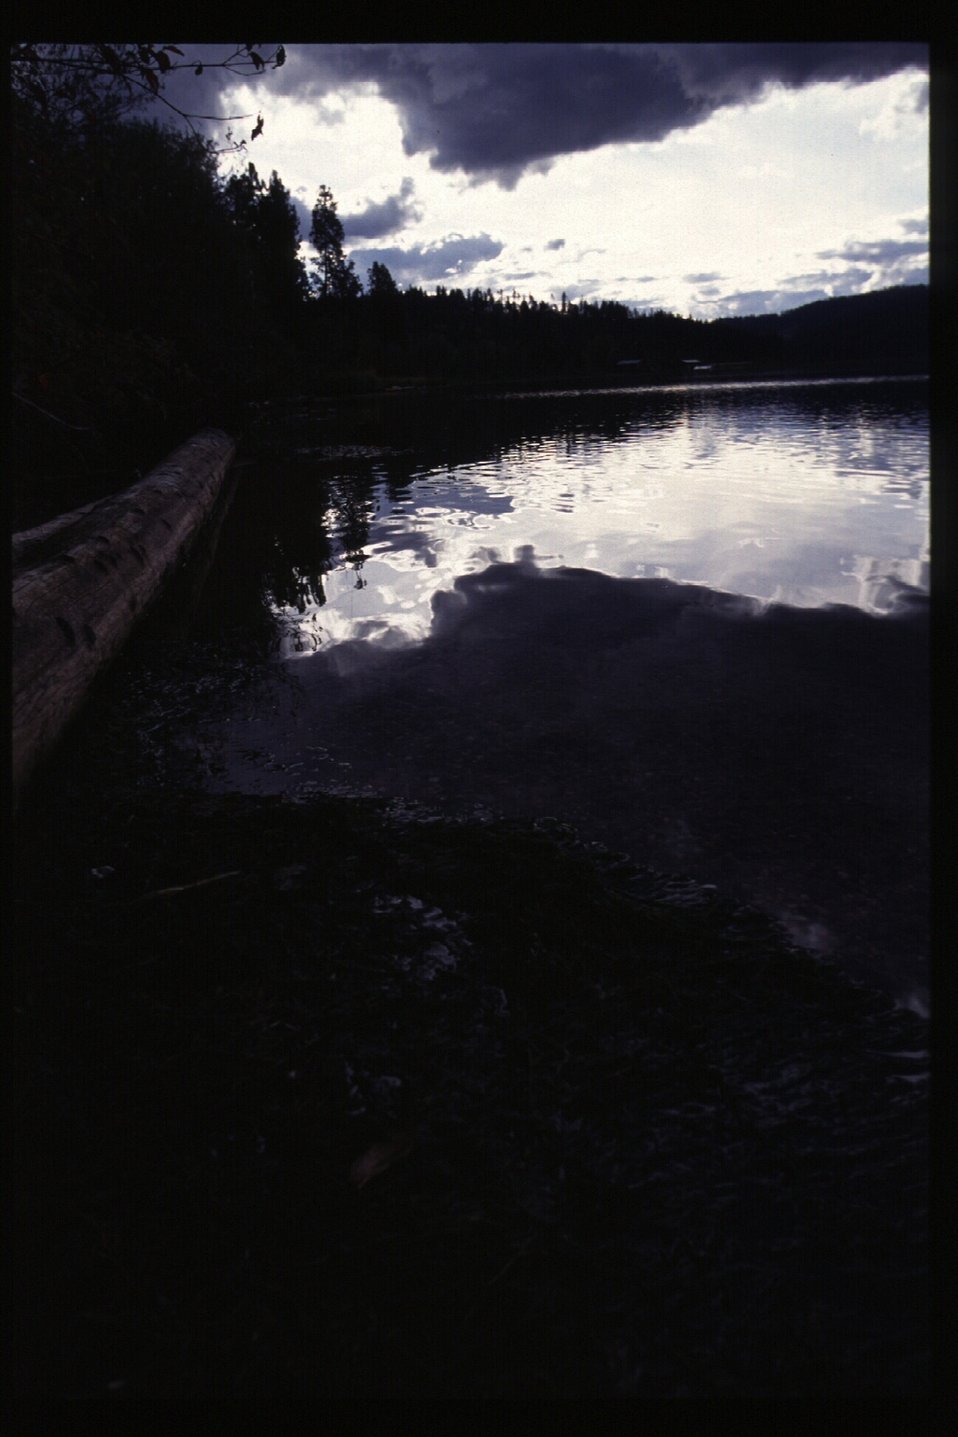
Scenic Cougar Bay Couer d'Alene Field Office UCSC Upper Columbia Salmon Clearwater District